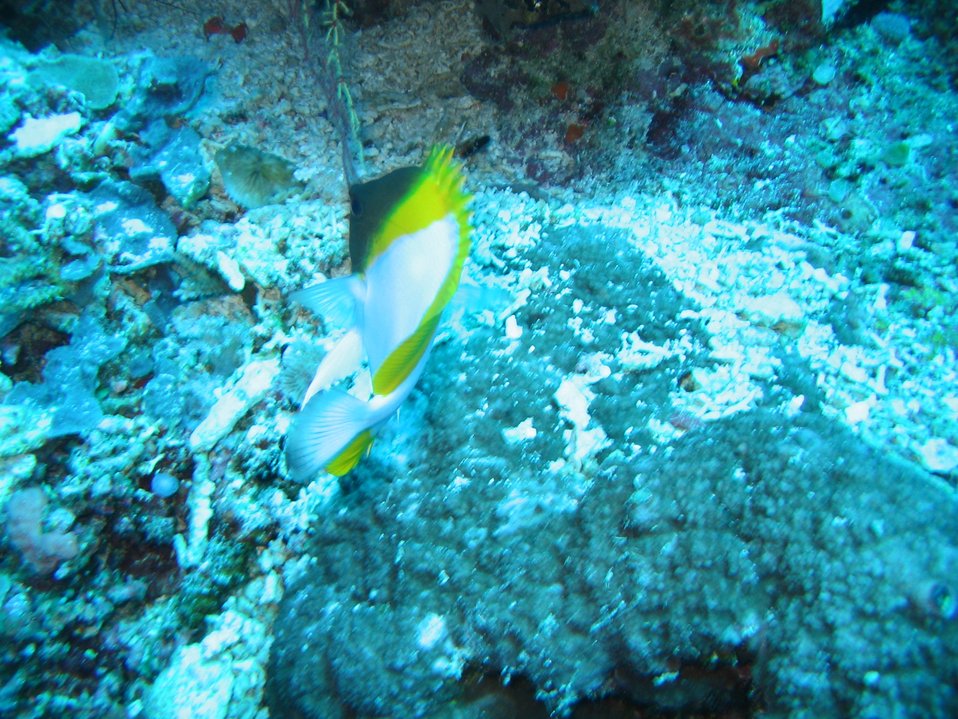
Pyramid butterflyfish (Hemitaurichthys polylepis)